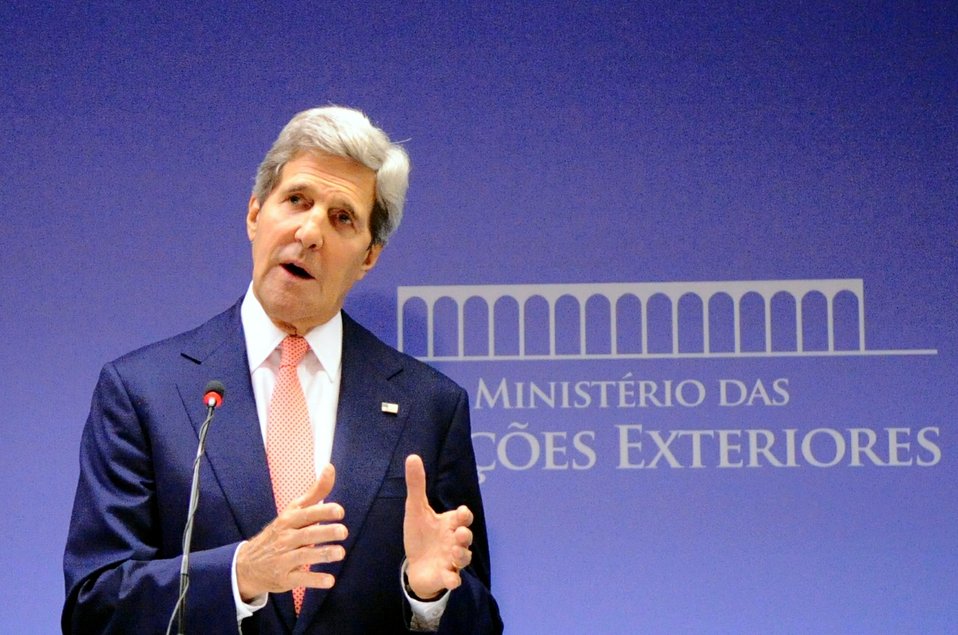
Secretary Kerry Addresses Reporters in Brasilia

U.S. Secretary of State John Kerry and Brazilian Foreign Minister Antonio Patriota address reporters during a joint news conference in Brasilia, Brazil, on August 13, 2013.